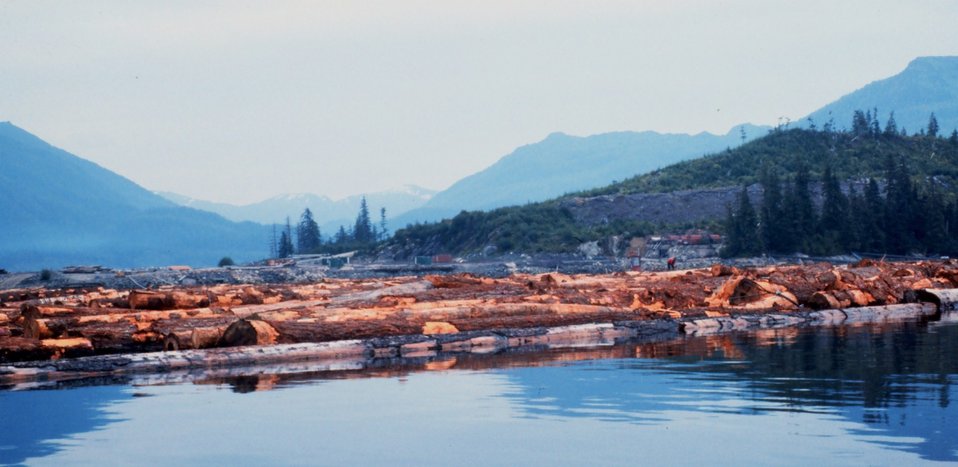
Log raft at Hobart Bay on east side of Stephens Passage